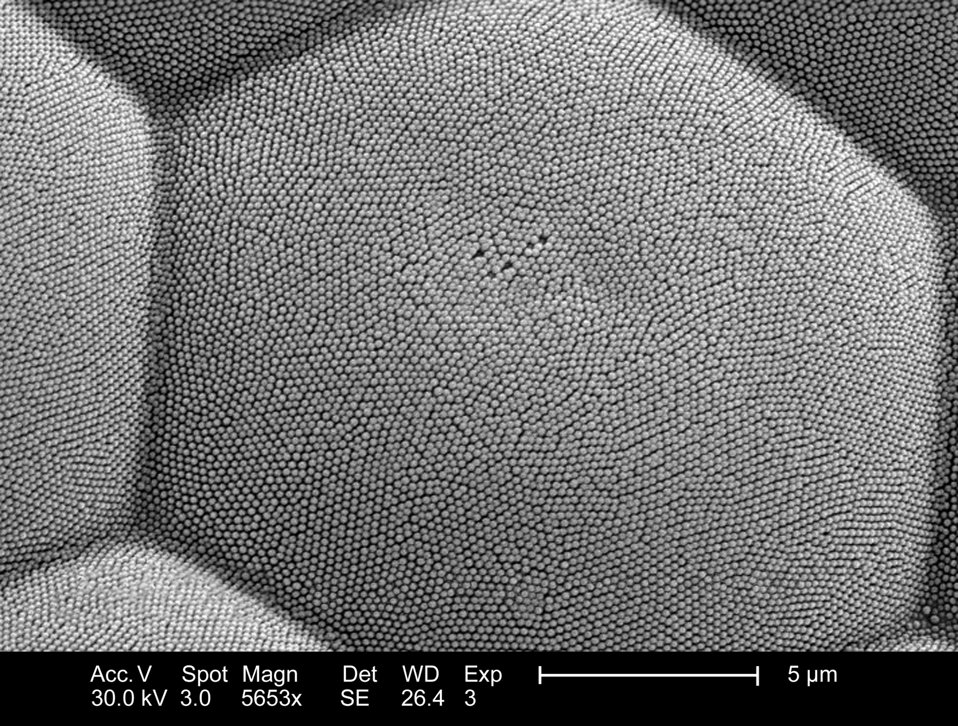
Under this high magnification of 5653x, this scanning electron micrograph (SEM) depicted the surface of an unidentified insect's compound eye. Discovered diceased on the grounds of the Decatur, Georgia suburbs, the eye is seen to be composed of repeating hexagonally-shaped units known as 'ommatidia', hence the term 'compound'. The white specs on the surface of the eye are merely debris particles of unknown origin. In order to fully appreciate the structural hierarchy of the compound eye, see PHIL 7875, 7877, 7878, 7879, this image (7880), and 7881, for successively greater magnifications of this visual structure.